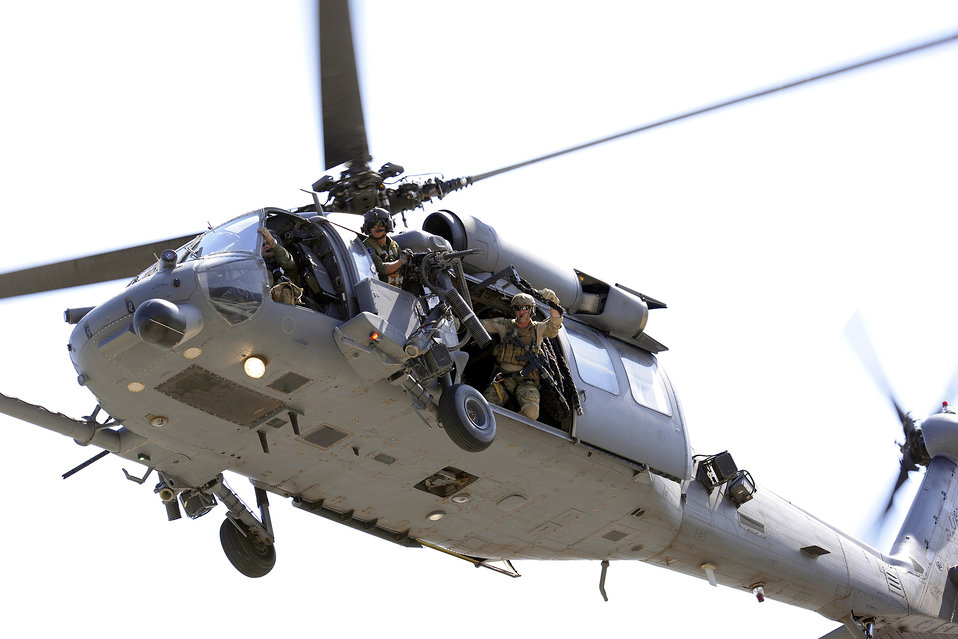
All systems go

An HH-60 Pave Hawk helicopter crew participates in a combat search and rescue demonstration recently at the U.S. Air Force Academy in Colorado Springs, Colo. The HH-60 and its crew are assigned to Davis-Monthan Air Force Base, Ariz.